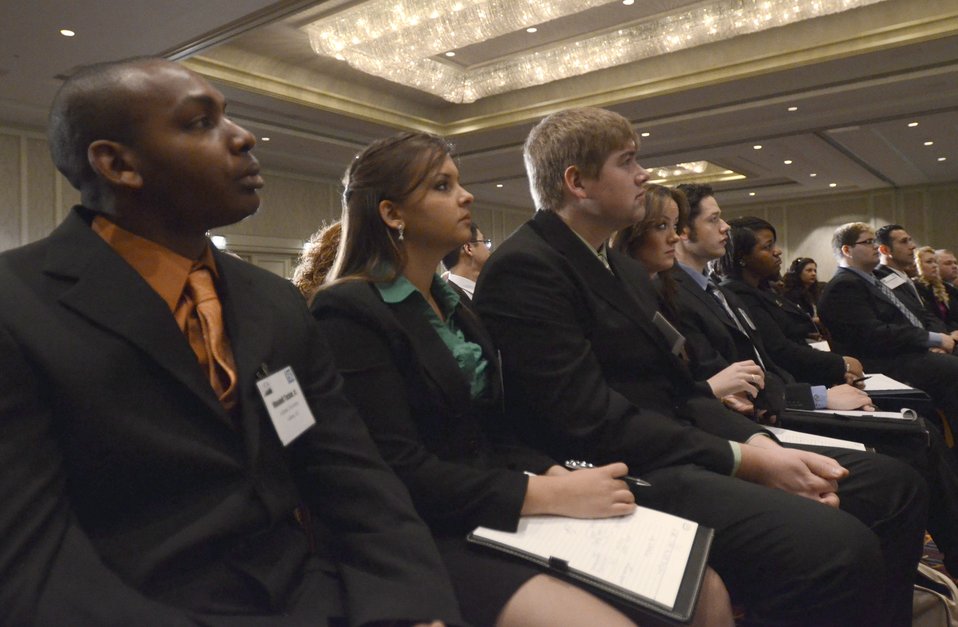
Attendees at the 2012 Agricultural Outlook Forum listen as Agriculture Secretary Tom Vilsack makes remarks at the 2012 Agricultural Outlook Forum, “Moving Agriculture Forward” in Arlington, VA., on Thursday, February 23, 2012.